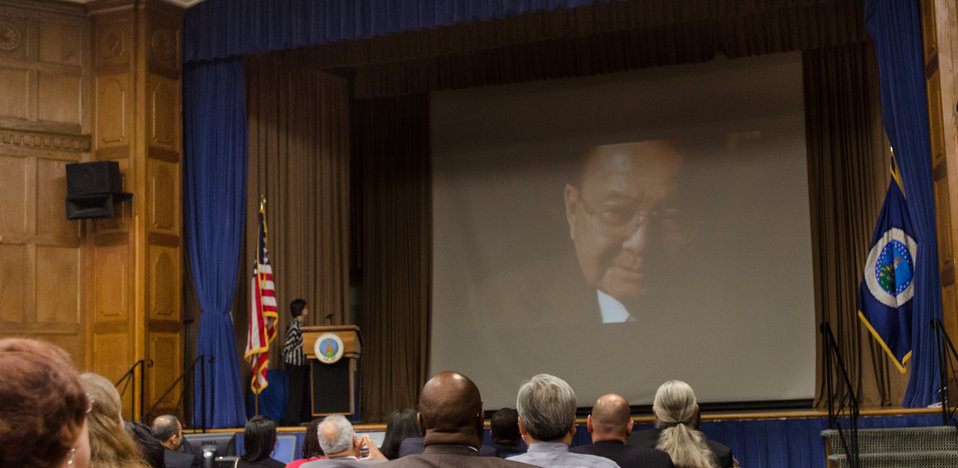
U.S. Department of Agriculture (USDA) Foreign Agricultural Service (FAS) Associate Administrator Janet Nuzum presents a tribute to Senator Daniel Inouye, during the USDA Asian Pacific American Heritage Month Observance, at the USDA headquarters in Washington, D.C., on Thursday, May 23, 2013. This year’s theme is “Building leadership; Embracing the Cultural Values and Inclusions.”